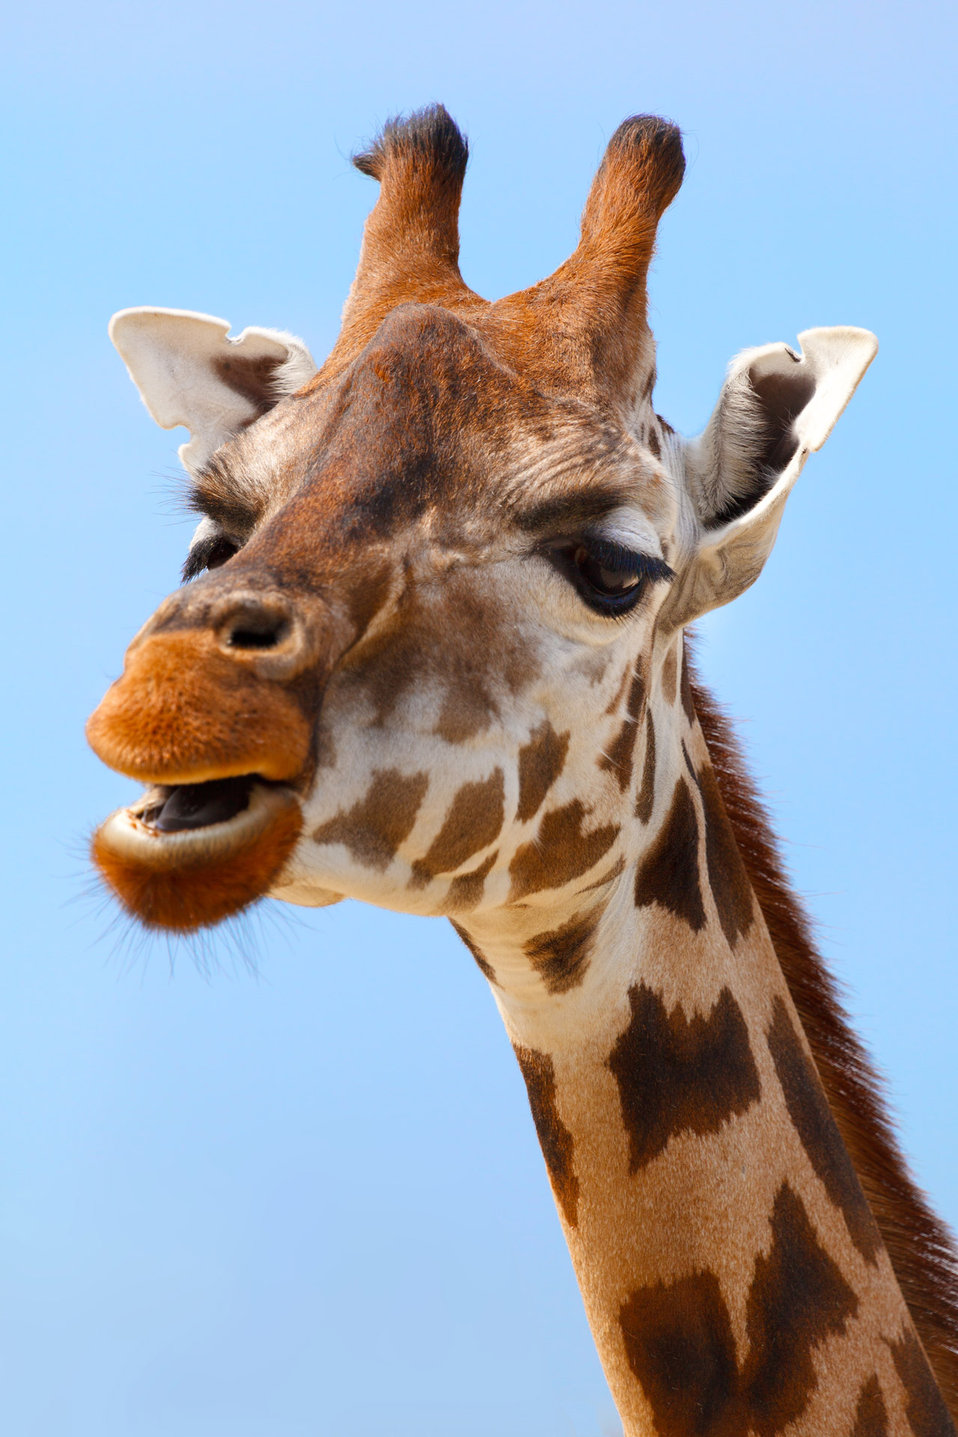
Giraffe portrait

Giraffe against blue sky.